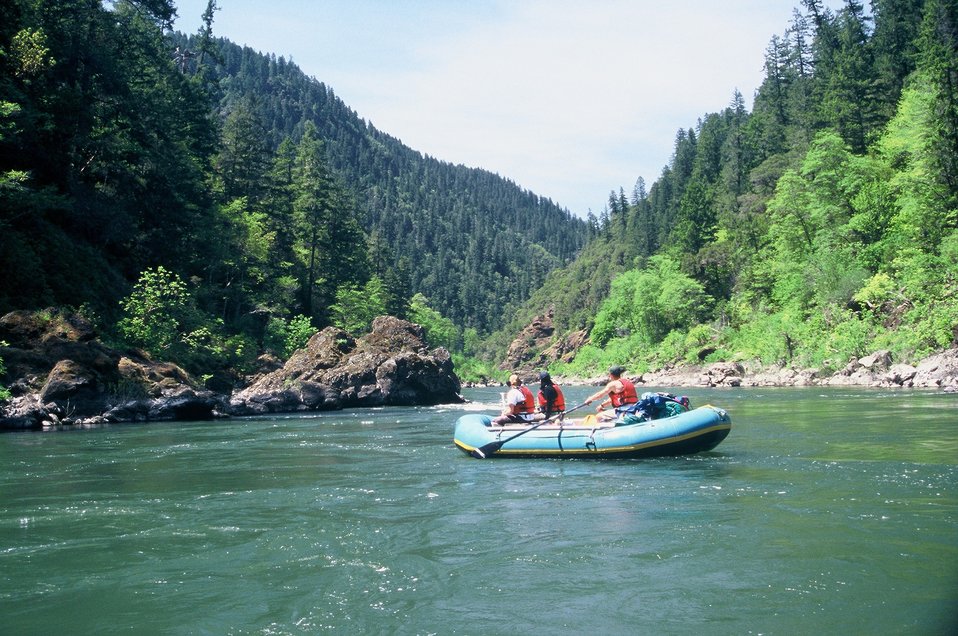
Wild section of the Rogue River from Grave Creek to Foster Bar May 19 to May 22.